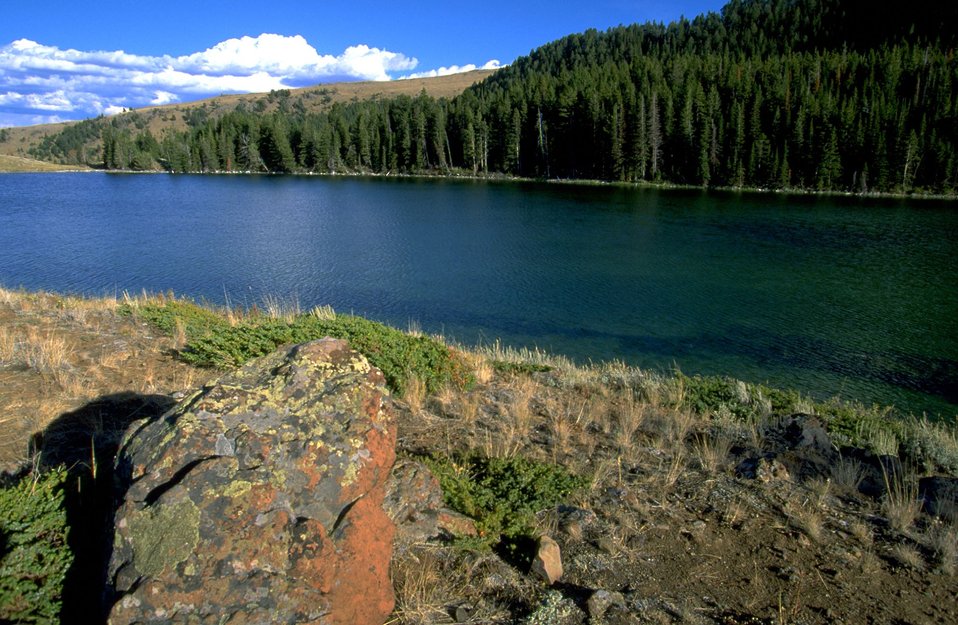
Axolotl Lake, lower end